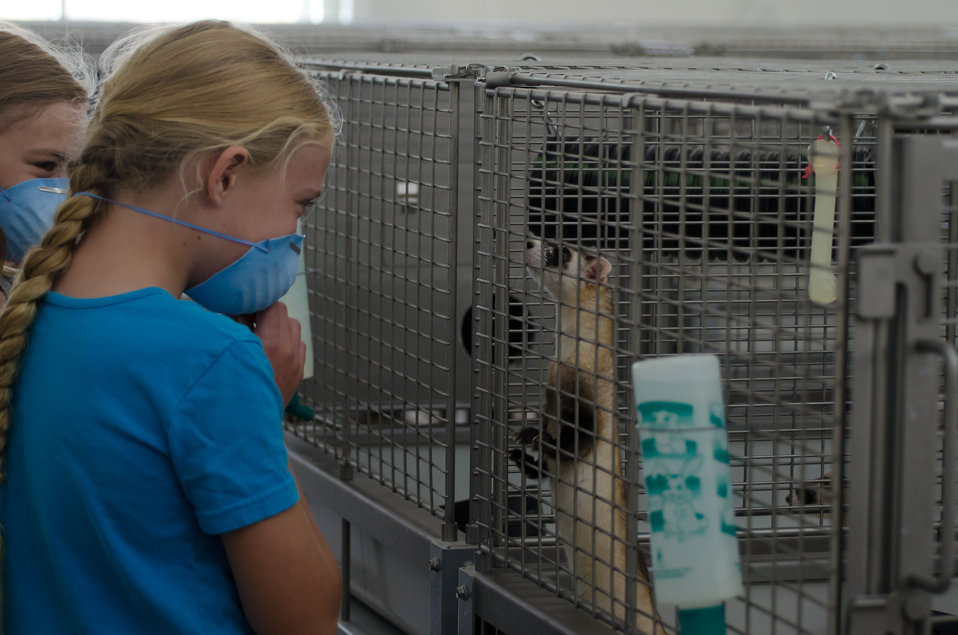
Hello, Black-footed Ferret

Noreen's daughter and Hannah toured the black-footed ferrets in captivity. While visiting, the girls wore masks and took precautionary measures so as to avoid transmitting any germs to the endangered species.